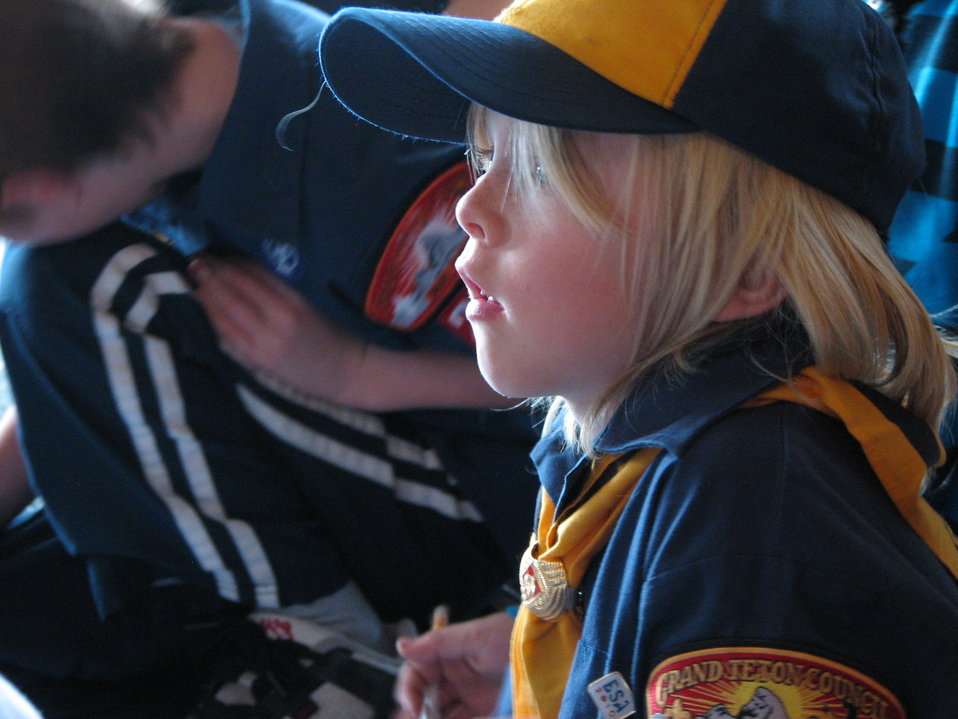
A Teachable Moment

A Cub Scout listens attentively during a National Elk Refuge naturalist presentation given to his den at the Jackson Hole & Greater Yellowstone Visitor Center.